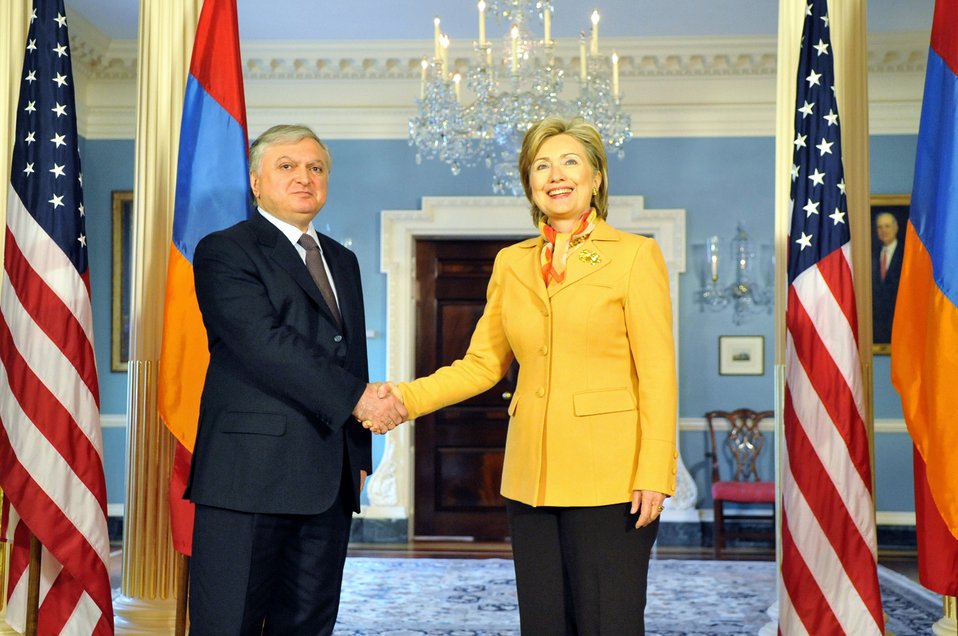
Secretary Clinton Meets With Armenian Foreign Minister

U.S. Secretary of State Hillary Rodham Clinton hosts a bilateral meeting with Armenian Foreign Minister Edward Nalbandian in the Treaty Room of the U.S. Department of State in Washington, DC May 5, 2009.